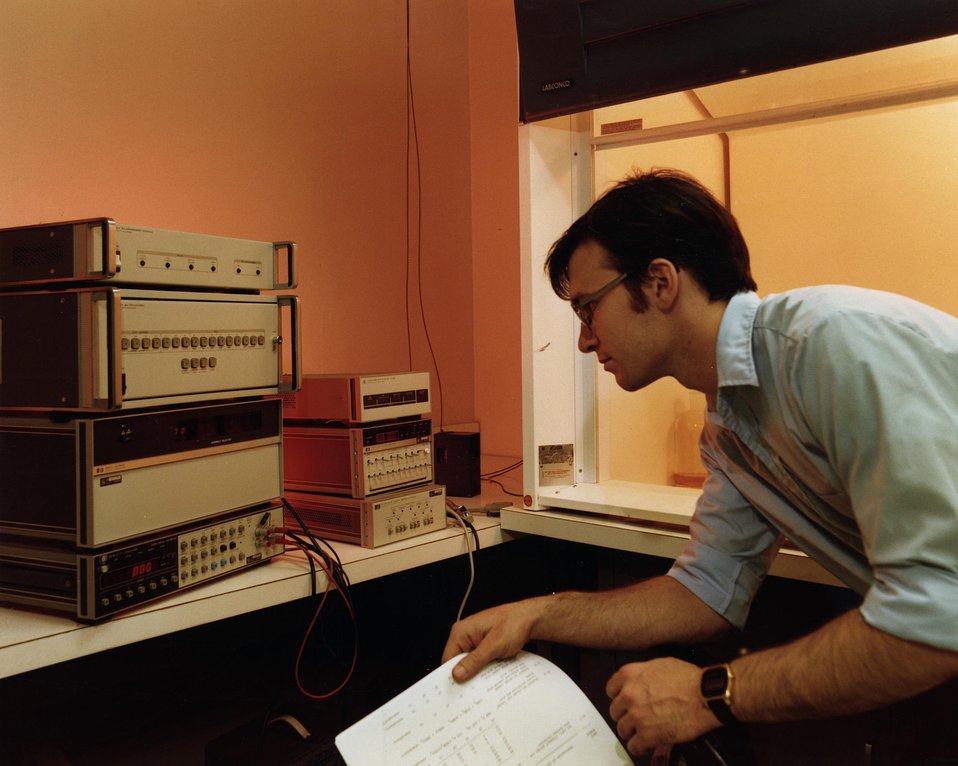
GE'S AUTOMATED EQUIPMENT USED FOR FUEL CELL TESTING.

A NEWER METHOD OF COMMERCIALLY GENERATING ELECTRICITY IS BEING DEVELOPED BY GENERAL ELECTRIC. FUEL CELLS, BATTERY-LIKE GENERATORS, PRODUCE ELECTRICITY BY AN ELECTROCHEMICAL RE- ACTION. UNLIKE THE BATTERY, THE FUEL CELL HAS A CONSTANT SOURCE OF FUEL. IN THIS PROGRAM, G.E. IS PLANNING TO USE GASIFIED COAL TO POWER THE CELLS. THIS HYDROGEN-RICH FUEL IS FED INTO ONE SIDE OF THE CELL WHILE OXYGEN IS FED INTO THE OTHER. THIS CREATES A NEGATIVE CHARGE AT THE HYDROGEN (ANODE) SIDE AND A POSITIVE CHARGE AT THE OXYGEN (CATHODE) SIDE. THE ATTRACTION OF THESE CHARGES CAUSES THE ELECTRONS TO FLOW THROUGH THE MOLTEN CARBONATE ELECTROLYTE. THIS MOVEMENT OF THE ELECTRONS CREATES THE ELECTRICITY. BECAUSE THE MOLTEN CARBONATE FUEL CELL HAS A HIGH OPERATING TEMPERATURE, IT CREATES EXCESS HEAT WHICH CAN BE USED TO POWER OTHER ELECTRIC GENERATORS.